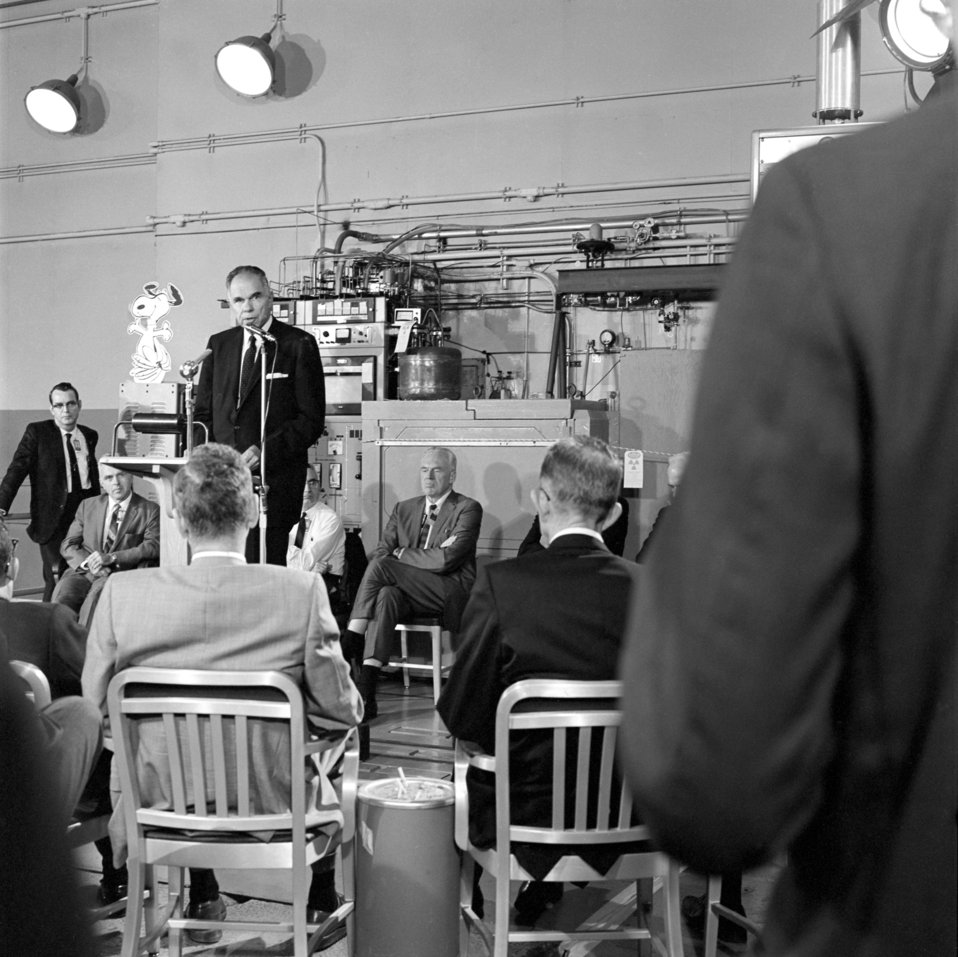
Startup of MSRE with U-233 with Atomic Energy Commission Chairman Glenn Seaborg speaking 1968 Oak Ridge

68-510 DOE photo Frank Hoffman 10-10-1968 Molten Salt Reactor began operating with uranium-233 fuel Oak Ridge Tennessee